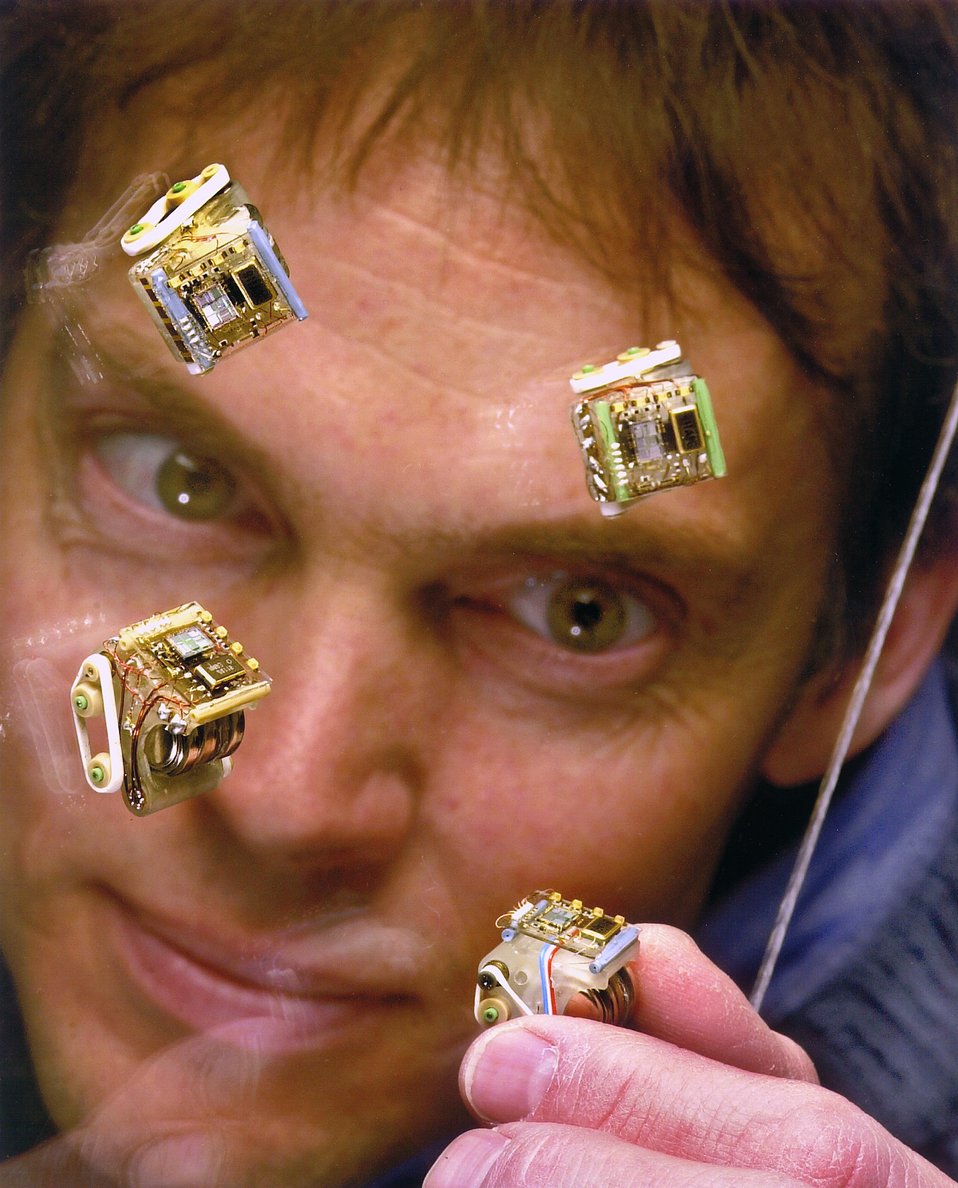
MINI-ROBOTS DEVELOPED AT SANDIA NATIONAL LABORATORY.

SANDIA SCIENTIST TAKES CLOSE-UP VIEW OF MINI-ROBOTS BEING DEVELOPED AT SANDIA. AT 1/4 INCH AND WEIGHING LESS THAN AN OUNCE, THEY ARE POSSIBLY THE SMALLEST, AUTONOMOUS UNTETHERED ROBOTS EVER CREATED. THESE MINI-ROBOTS HAVE THE CAPABILITY TO REDUCE THE IMPACT OF HAZARDS IN A VARIETY OF DANGEROUS CIVIL AND MILITARY ENVIRONMENTS.